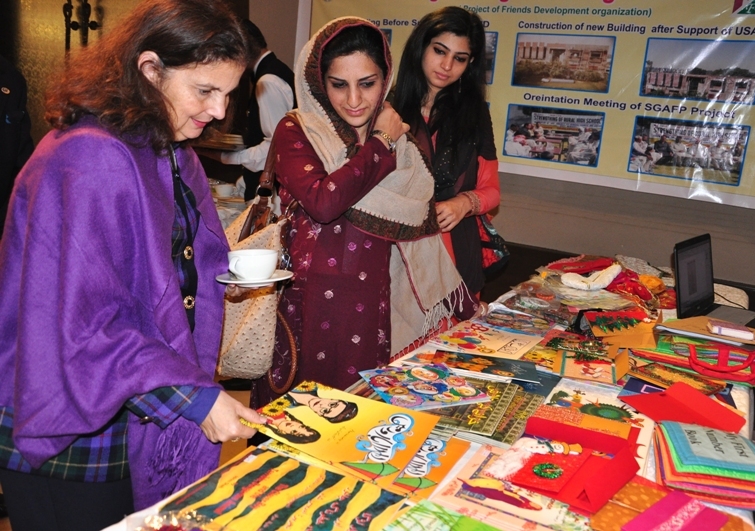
Education Workshop 220